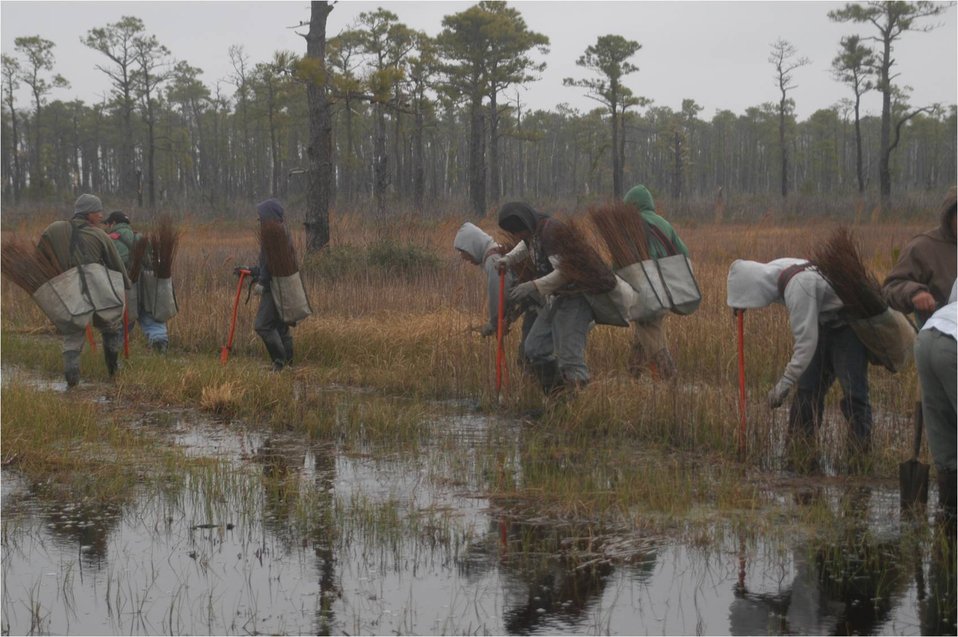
A group of tree planters

As part of The Nature Conservancy’s Albemarle Climate Change Adaptation Project on Alligator River National Wildlife Refuge, crews in 2010 planted 20,000 trees, including bald cypress, black gum and pond pine trees. The project will keep track of which trees fare the best in changing conditions.